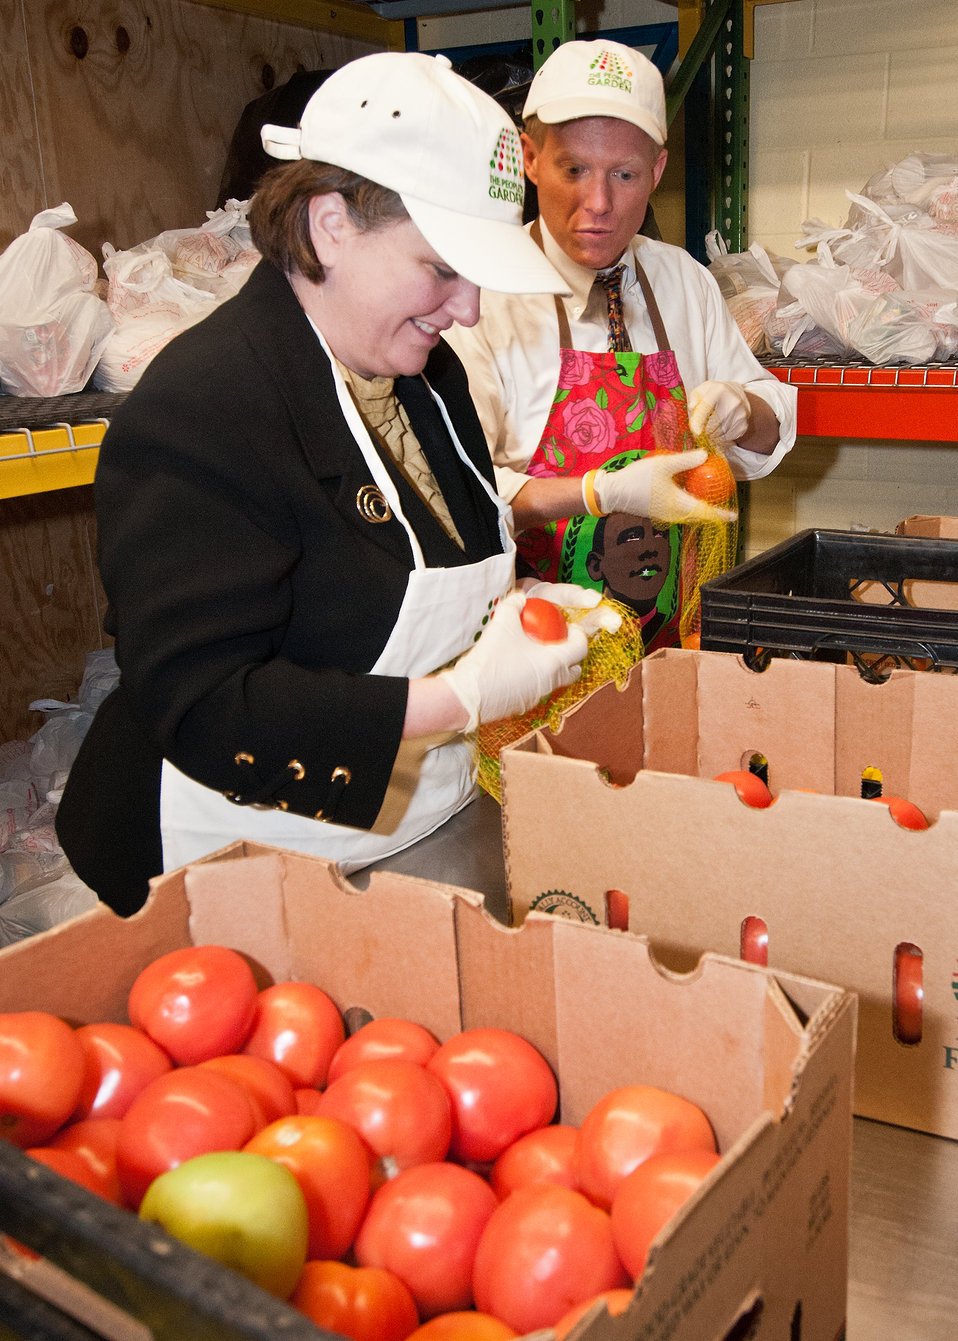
Dr. Kathleen Merrigan (left), Deputy Secretary and Max Finberg (right), Director, Center for Faith Based and Neighborhood Partnerships fill mesh bags with tomatoes at the Arlington Food Assistance Center in Arlington, Virginia, Thursday, January 12, 2012. Agriculture Secretary Tom Vilsack designated January 12 as the United States Department of Agriculture’s Martin Luther King Day of Service to recognize Dr. King’s contributions to the Civil Rights Movement. The volunteer service at the Arlington Food Assistance Center addresses hunger and serves anyone who is referred to them and how the United States Department of Agriculture is working via today’s day of service, but also through larger efforts to increase participation in our nutrition assistance programs.